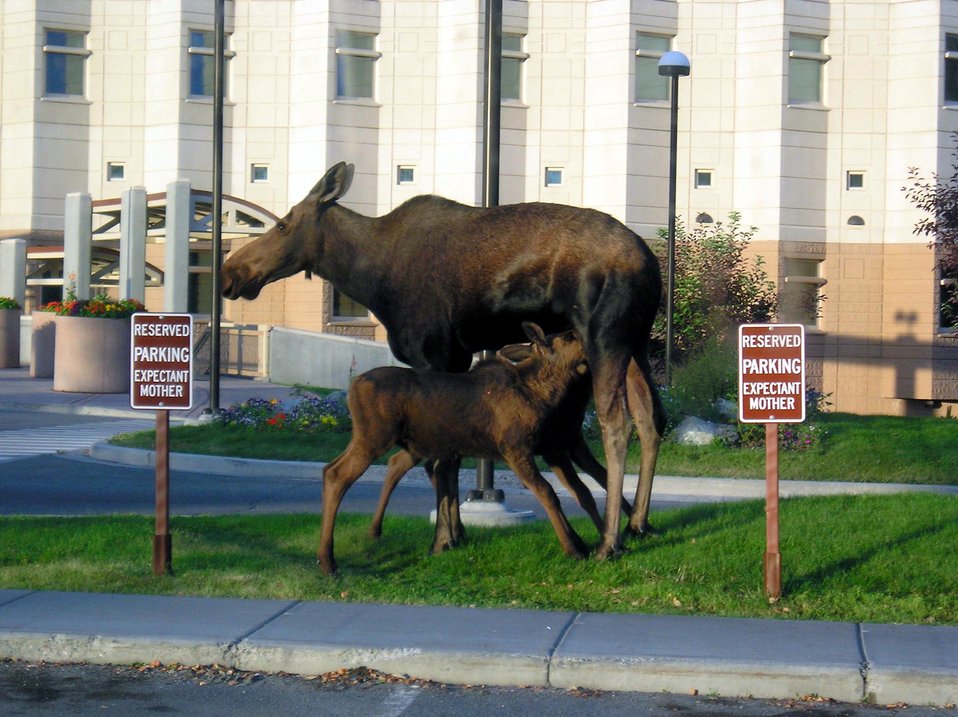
Time for lunch

ELMENDORF AIR FORCE BASE, Alaska - A moose and her calves